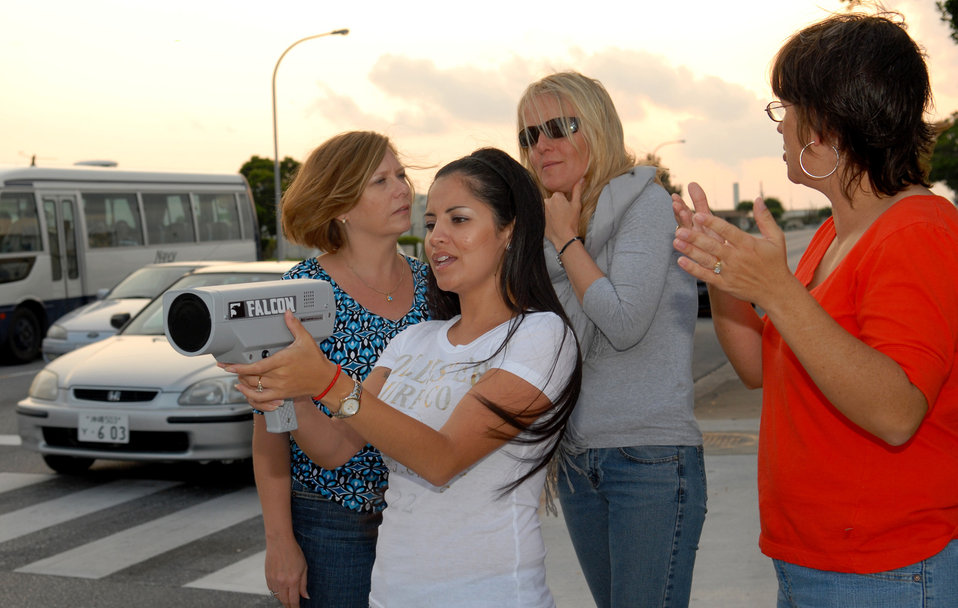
Spouses get taste of security forces' life

Base members train with the 18th Security Forces Squadron on the use of a speed detecting radar gun during the civilian police academy course May 27 at Kadena Air Base, Japan.